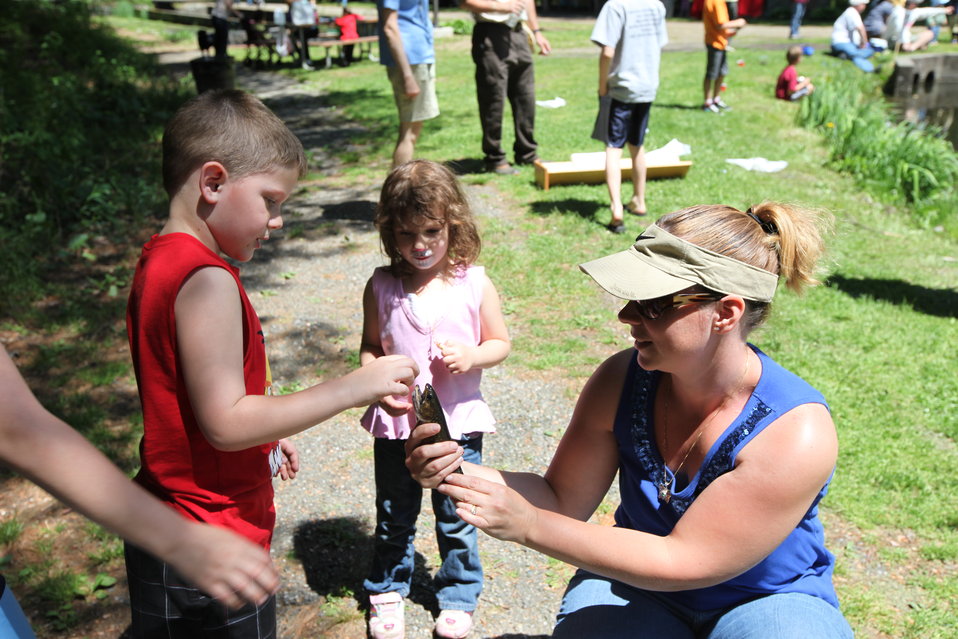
Youth Fishing Derby 2012

Megan Nagel/USFWS